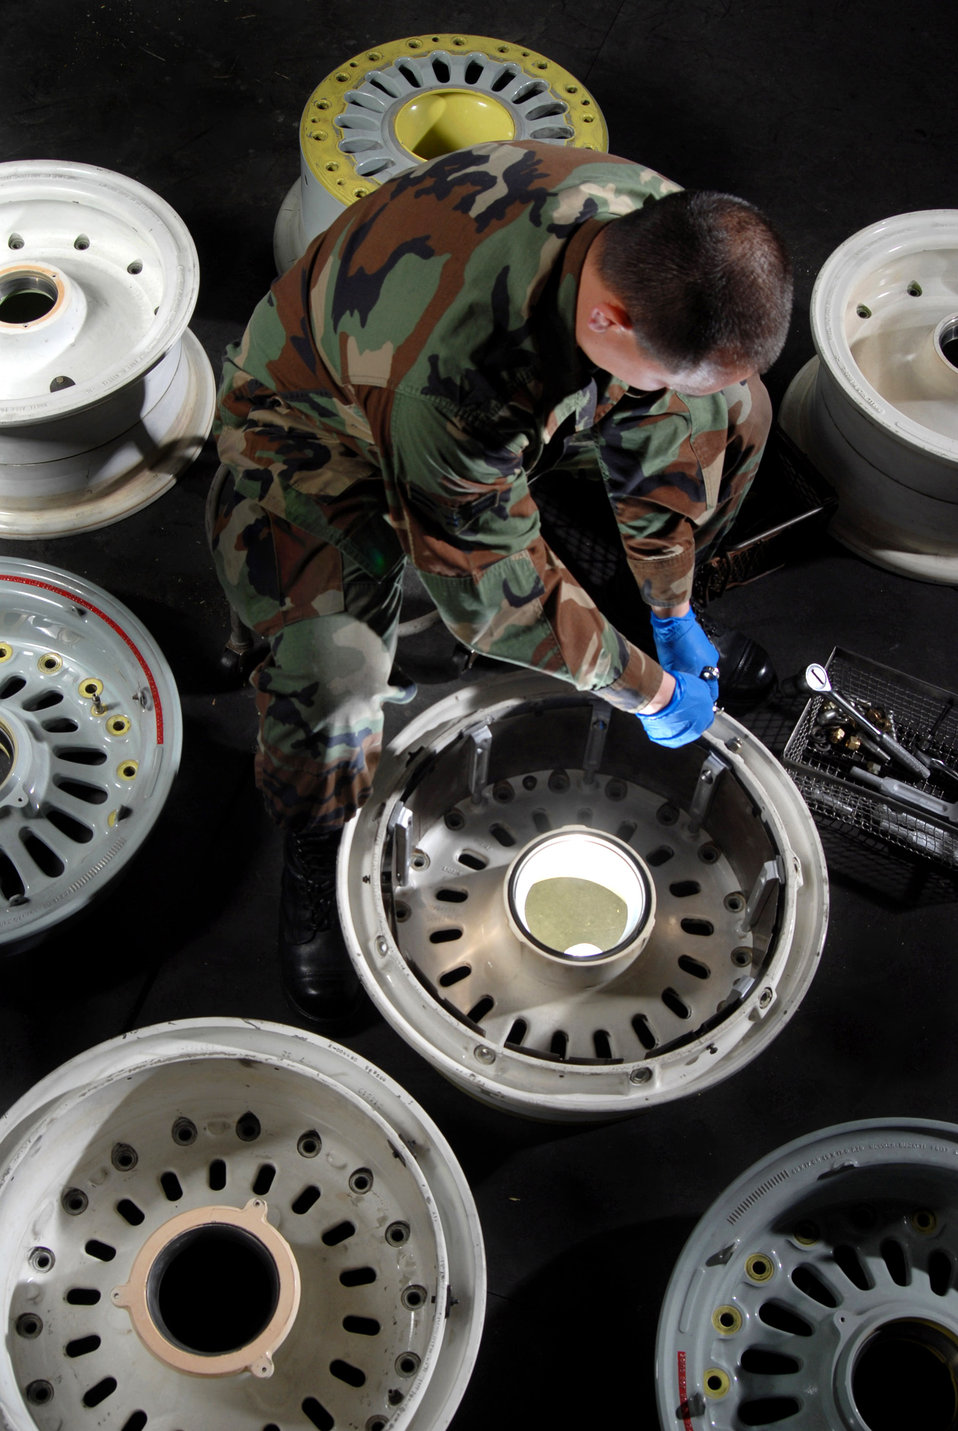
It's time to re-tire

Airman 1st Class Jonathan Centers, an aircraft mechanic from the Aero Repair Shop at March Air Reserve Base, Calif., uses a ratchet wrench Feb. 3 to install a heat shield on a KC-135 Stratotanker refueling aircraft main wheel. March ARB, located in Southern California, is home to the largest air mobility wing in the Air Force Reserve Command. It also is home to units from the Army Reserve, Navy Reserve, Marine Corps Reserve and Air National Guard.